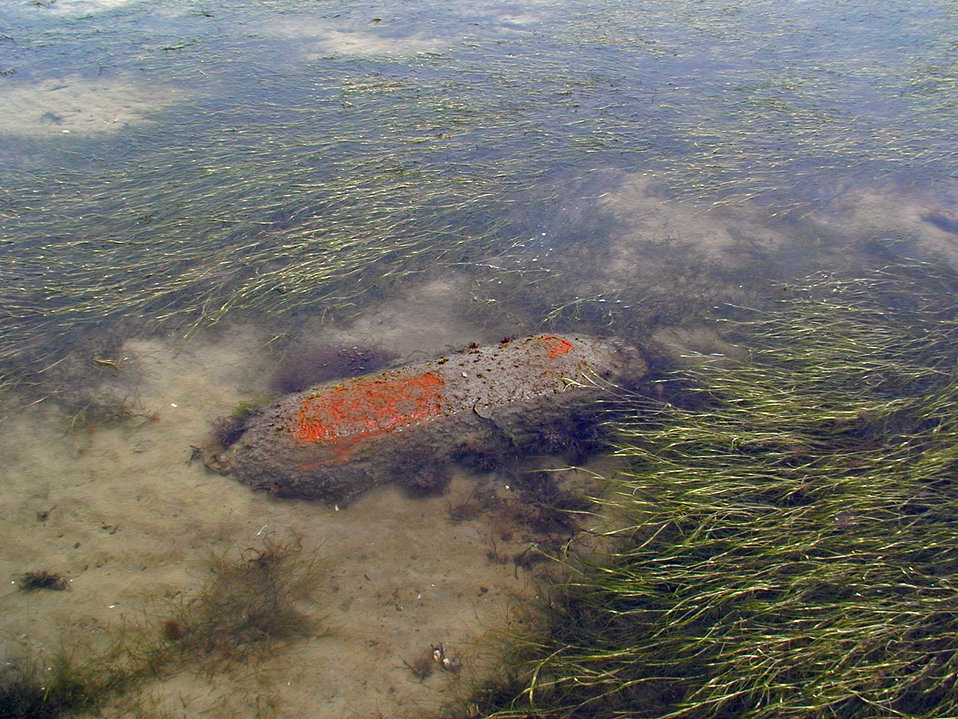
Unexploded ordinance

Plum Tree Island National Wildlife Refuge is closed to the public due to unexploded ordinance throughout the refuge.